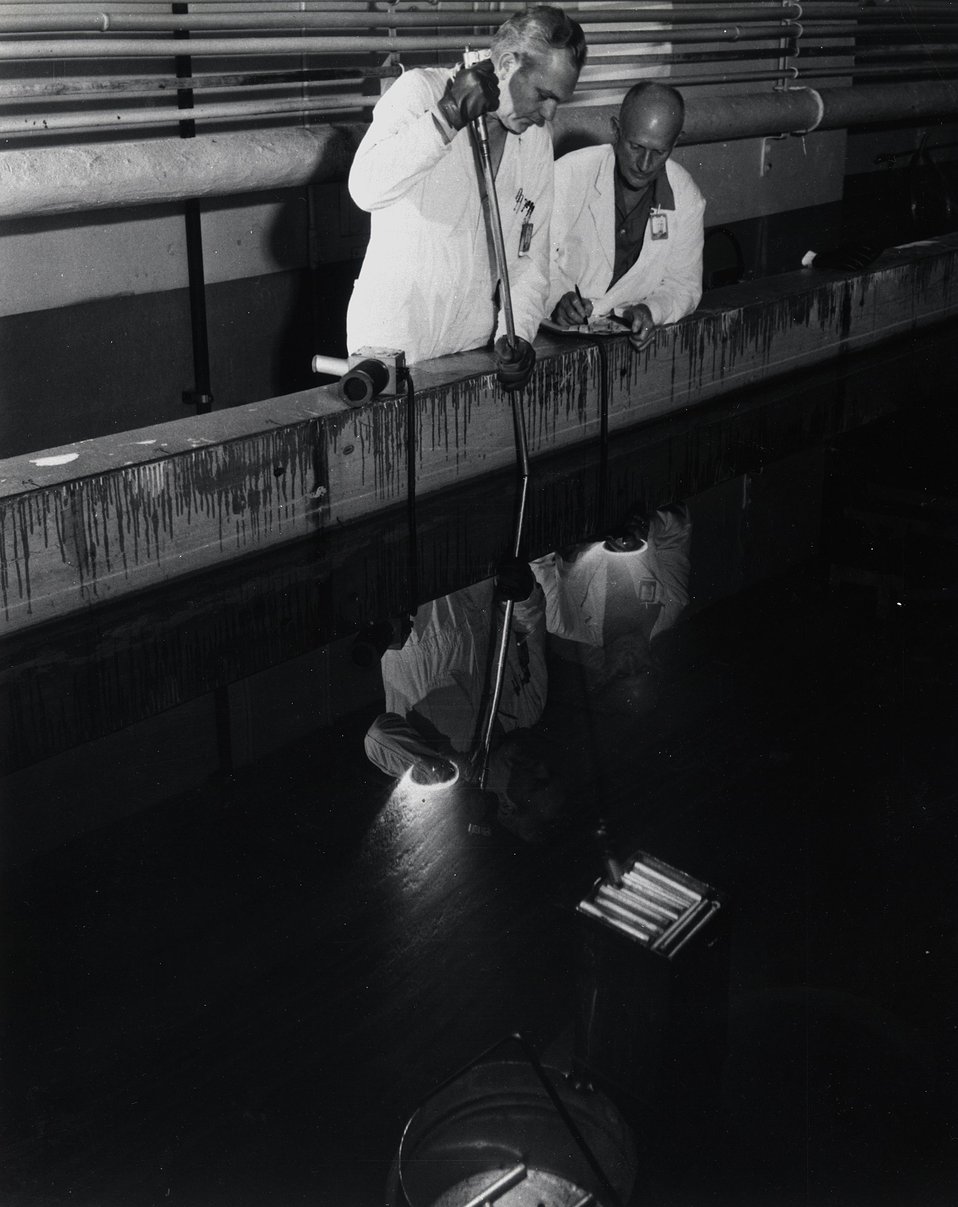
Unloading the graphite reactor for the last time. Two Oak Ridge National Laboratory staff members are shown removing natural uranium fuel slugs from a 20-foot canal of water beneath ORNL's world-famous Graphite Reactor. c. 1967